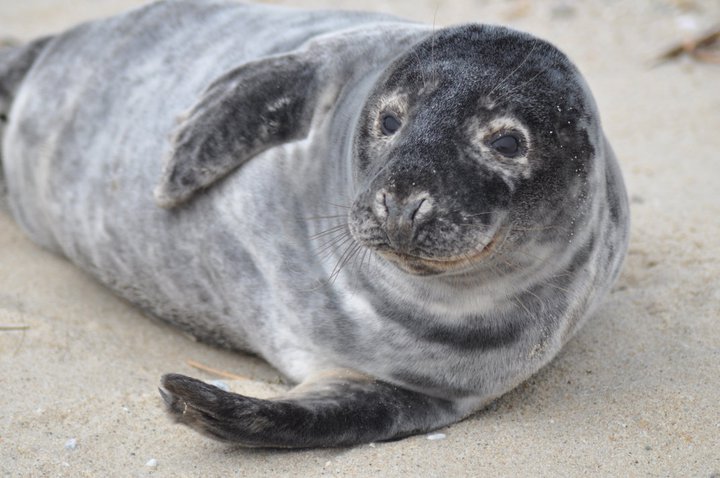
Gray seal at Nantucket National Wildlife Refuge in Massachusetts.